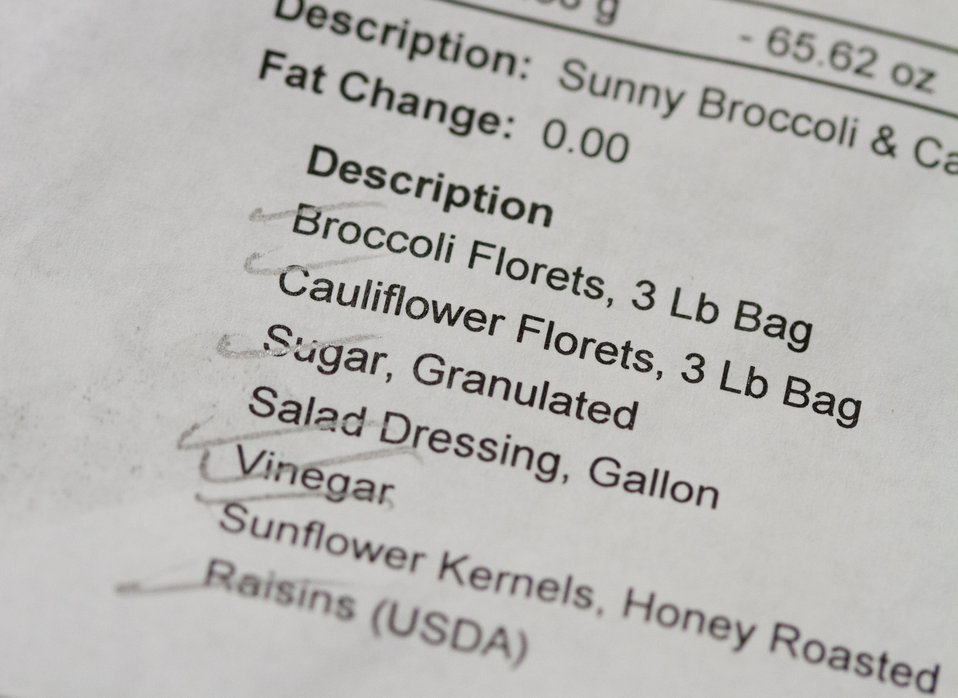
The ingredients of an apple and celery cup with sunbutter dip is an important new menu item that substituted peanut butter with a sunflower seed-based spread, and was sampled by more than 50 students from the 5th grade classes at Yorkshire Elementary School in Manassas, VA., during a taste testing of the new school lunch menu created to meet the new standards. Students tested a sample menu of black-bean filled pizza, pineapple spear, and sunny broccoli and cauliflower toss, on Wednesday, September 5, 2012.